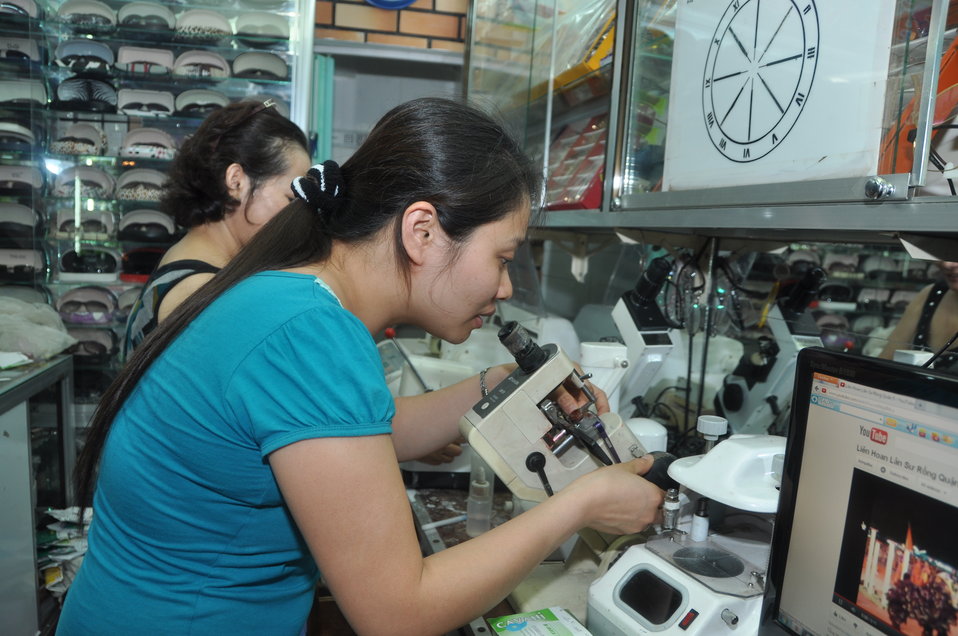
An eyeglasses specialist from the National Eye Hospital checks the quality of new glasses for students in Kon Tum.